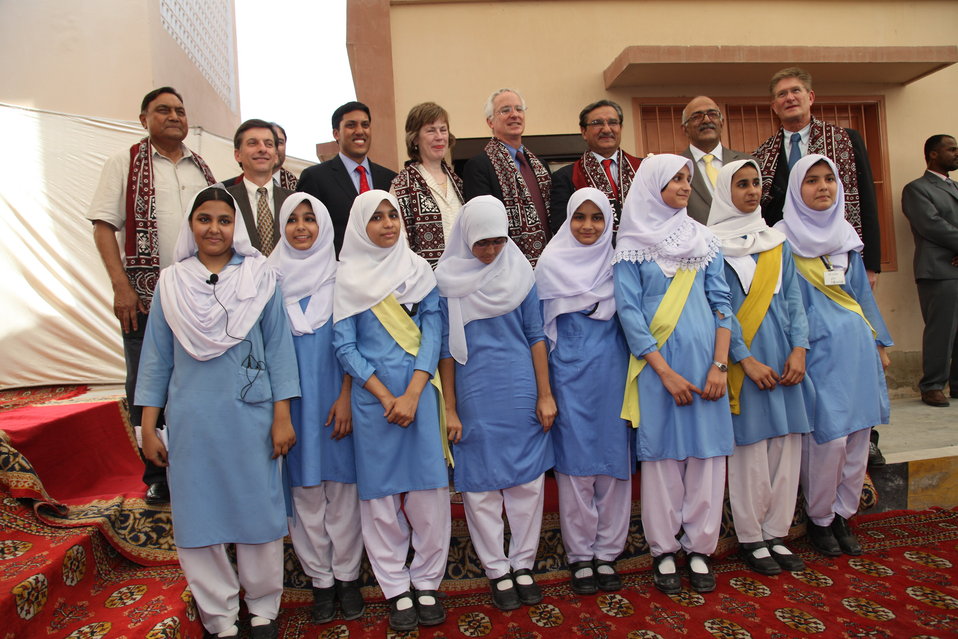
Launch of the USAID National Reading Program in Karachi on April 12, 2012.

General ® Moin-ud-Din Haider (Ex. Governor, Sindh/School Adopter), Dr. Andrew B. Session, Dr. Rajiv Shah, Dr. Marilyn Wyatt, Cameron Munter, Pir Mazhar-ul-Haq, Senior Minister Education and Literacy Department, Government of Sindh, Mr. Muhammad Siddique Memon, Secretary, Education and Literacy Department, Government of Sindh and William Martin, Consular General, Karachi.